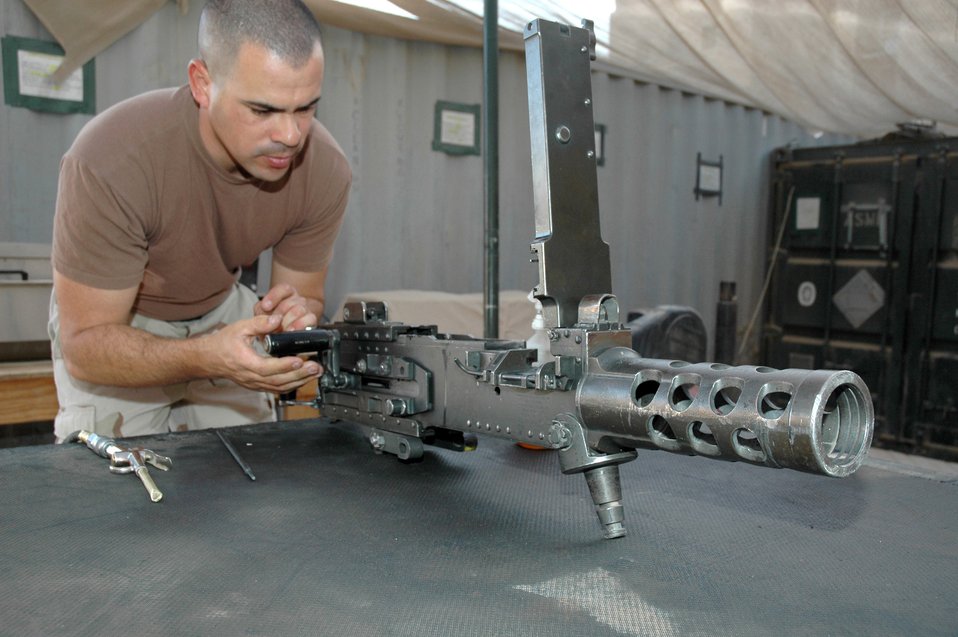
Air Force gun trucks deliver the goods

TIKRIT, Iraq (AFPN) -- Staff Sgt. Ricardo Remesal-Lopez cleans and checks the operation of a 50-cal machine gun before a night convoy at base Speicher. Airmen with the 732nd Expeditionary Logistics Readiness Squadron provide armed escort of combat patrols to ensure passengers and cargo reach their destinations throughout Iraq. Sergeant Remesal-Lopez deployed from Lackland Air Force Base, Texas.